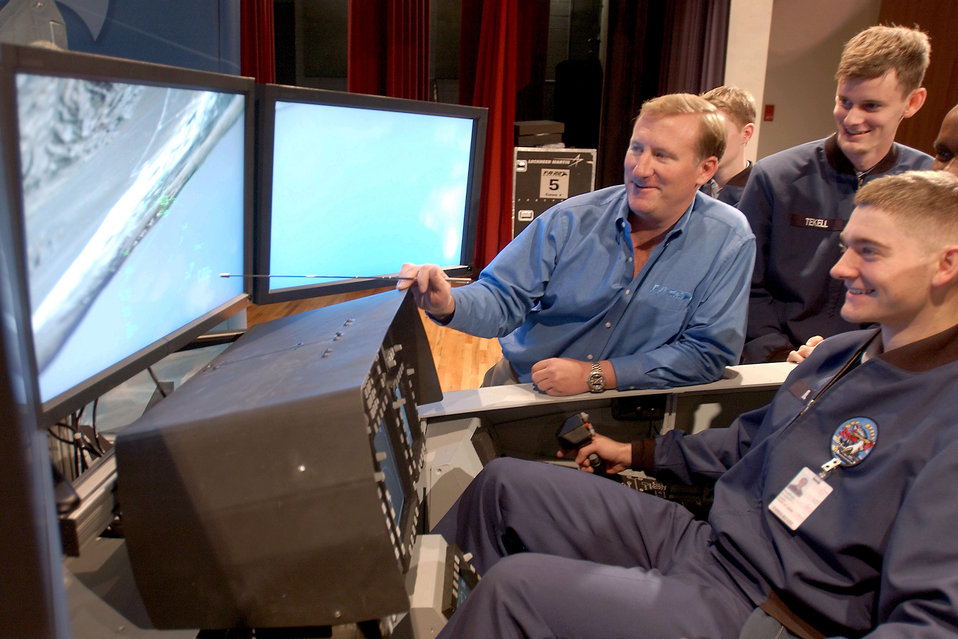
Taking control

U.S. AIR FORCE ACADEMY, Colo. -- Cadet 3rd Class Robert Kurpiel (foreground) tests the F/A-22 Raptor's lethality by engaging four aerial targets using the Lockheed Martin F/A-22 flight simulator Jan. 8. Academy cadets and staff got the opportunity to enjoy the flight simulator and talk with F/A-22 test pilots and program workers.